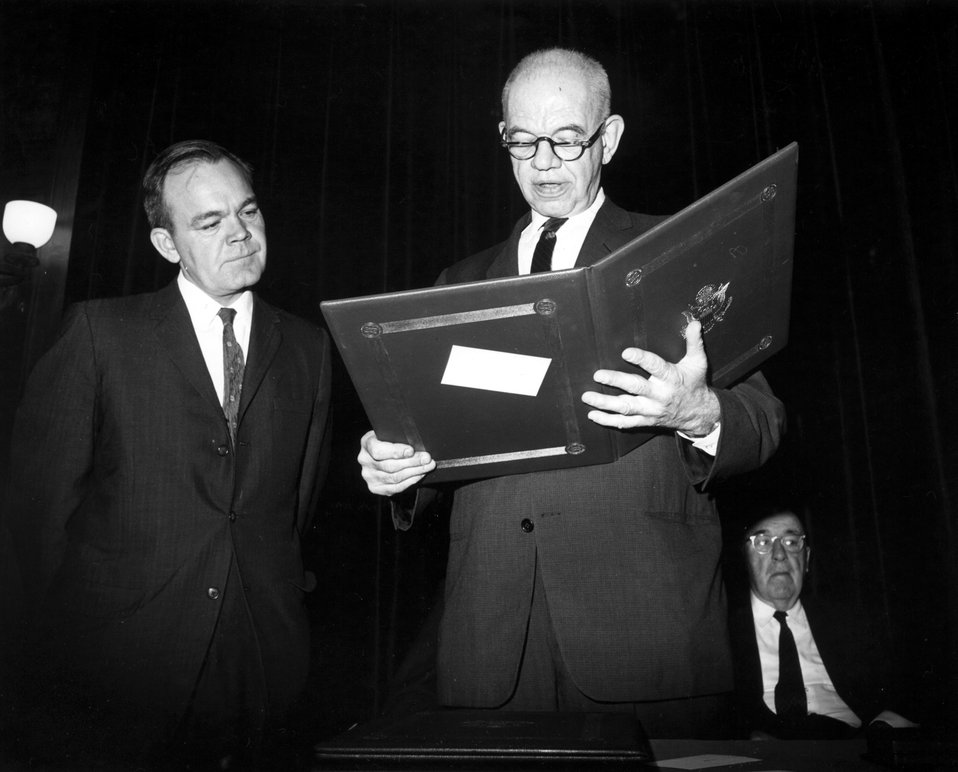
Dr. Haworth, Dr. Kouts. ERNEST O. LAWRENCE AWARD - 1963. National Academy of Sciences, April 25, 1963.